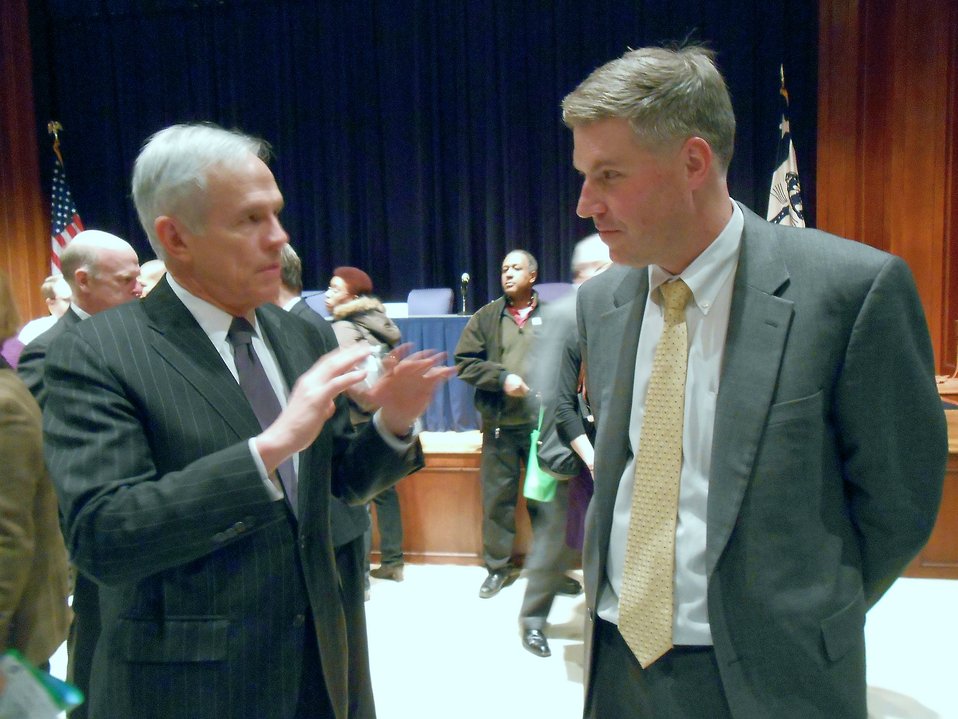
Department of Commerce 2013 Presidential Inauguration Open House

Former Congressman and Chair of the U.S. House of Representatives Science Committee Bart Gordon (left) discusses tech transfer issues with NIST Director Patrick Gallagher (right) as part of the Department of Commerce 2013 Presidential Inauguration Open House.

Credit: NIST/Allan Eustis

Event: Department of Commerce 2013 Presidential Inauguration Open House: Panel Discussions held at the Herbert C Hoover Auditorium in Washington DC.